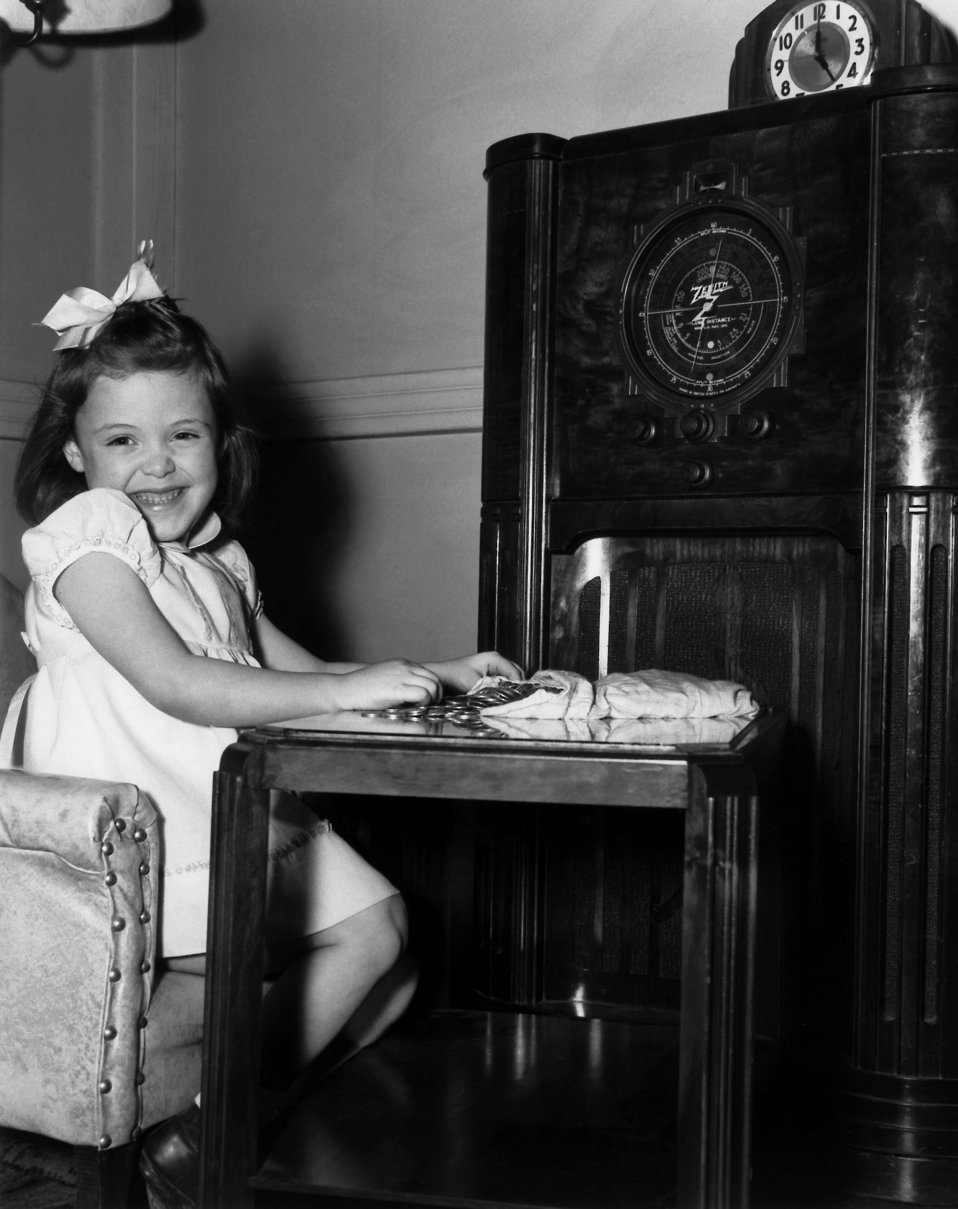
Little Girl Listening to Radio Oak Ridge

pro 302 DOE photo by Ed Westcott 2/22/45
Oak Ridge Tennessee